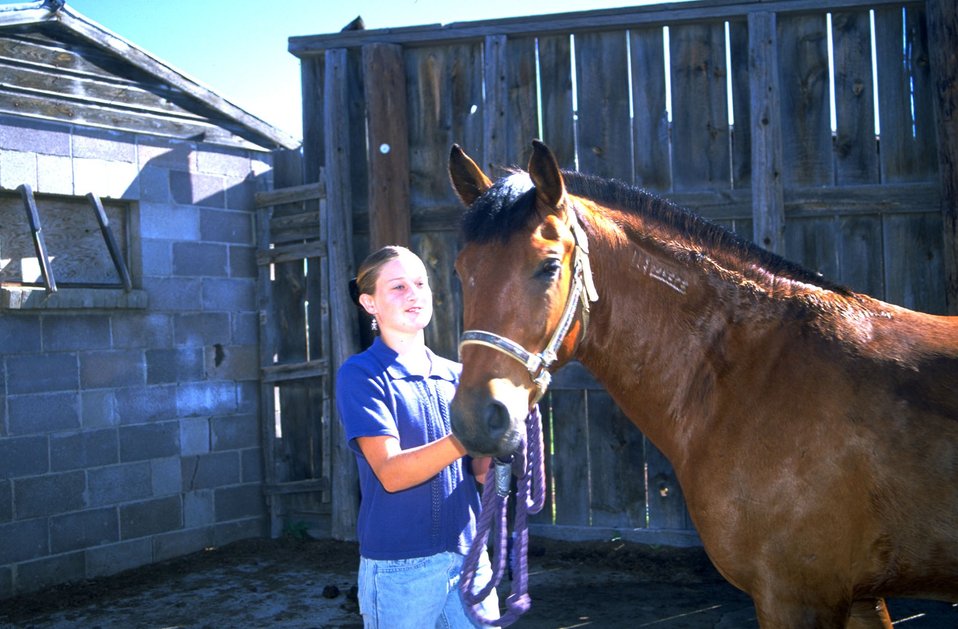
Adopted Horse, haltered